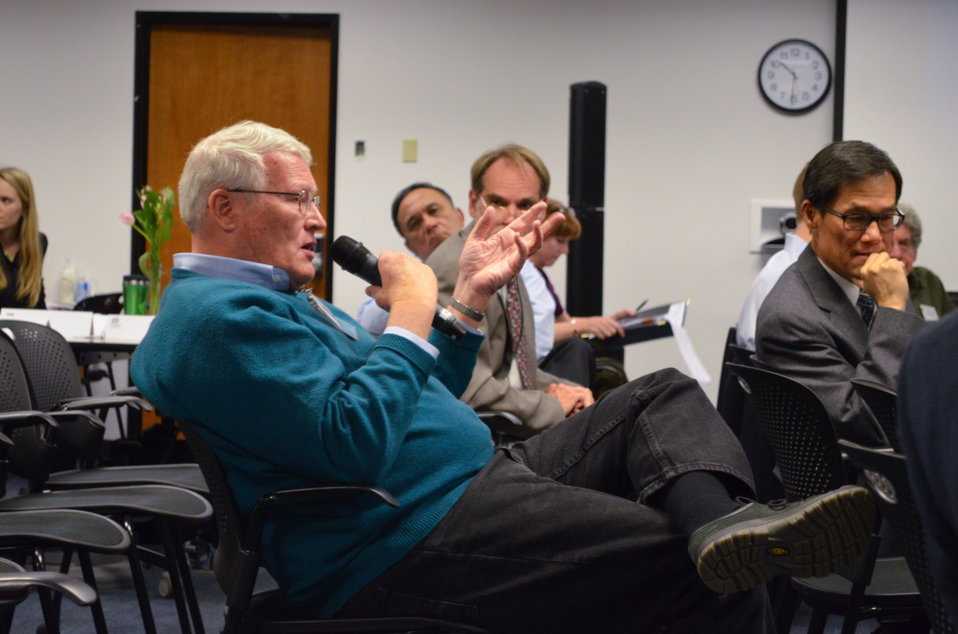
South Pacific Division’s collaboration summit in Sacramento, Calif., April 7, 2014

Ronald Stork of Friends of the River speaks at the U.S. Army Corps of Engineers South Pacific Division’s collaboration summit in Sacramento, Calif., April 7, 2014. Representatives from the California Water Education Foundation, Friends of the River, Center for Collaborative Policy and other partners joined Corps staff for panel discussions on how collaboration and communication on Corps projects can be improved and how we can all better engage members of the public in our project planning process.